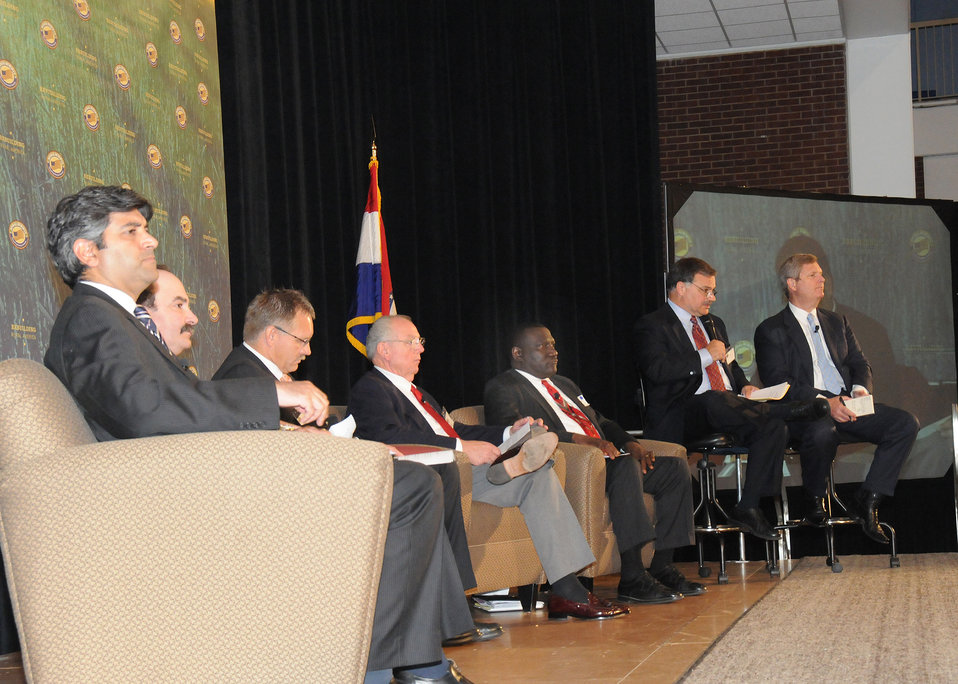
A Dialogue on Rural America was the first discussion panel held at the National Rural Summit held at Jefferson College in Hillsboro, MO., on Thursday, June 3, 2010. (Panelists L to R Chief Technology Officer and Assistant to the President Aneesh Chopra, President of Show Me Energy Steve Flick, President of National Corn Growers Association Darrin Ihnen, Past President of National Association of Conservation Districts John Redding, Mayor of Philadelphia, Mississippi James Young, Agriculture Broadcaster at WGN radio Max Armstrong, and Agriculture Secretary Tom Vilsack). USDA photo 10di1386-212.